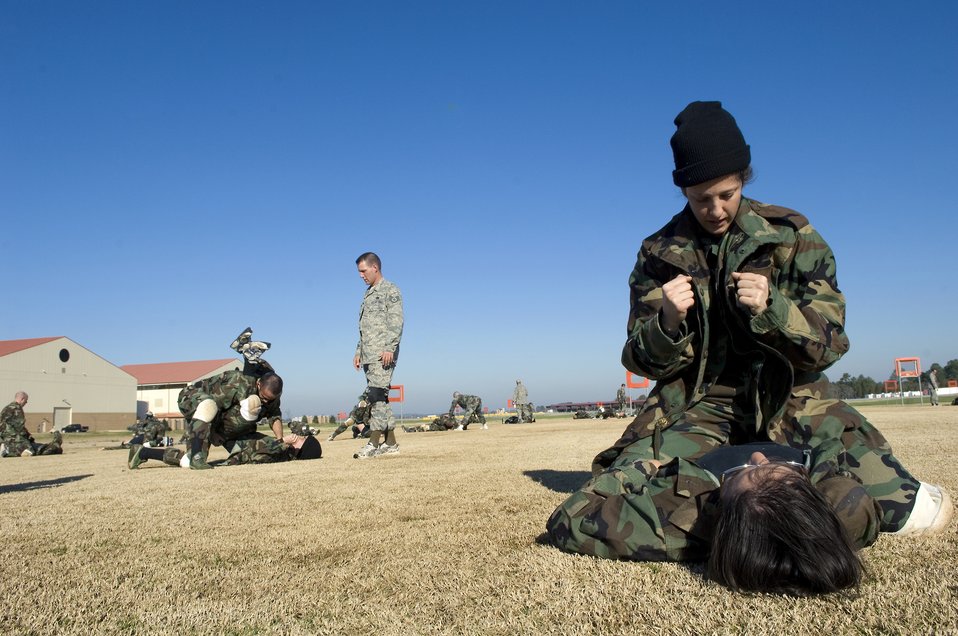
OTS begins new close combat course

Air Force officer trainees practice close-combat tactics Feb. 8 during the new Air Force Combative Program field exercise at the Officer Training School at Maxwell Air Force Base, Ala. All officer accession students are being given 11 hours of combative-skills training. Trainees learn ground fighting and basic jujitsu-style grappling moves to provide them with the confidence they need to defend themselves in combat situations.